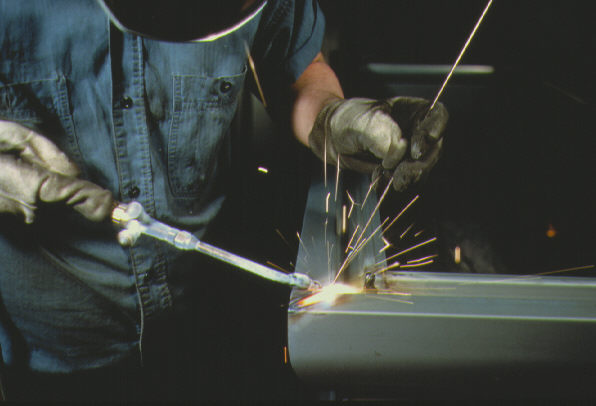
Work Hazards